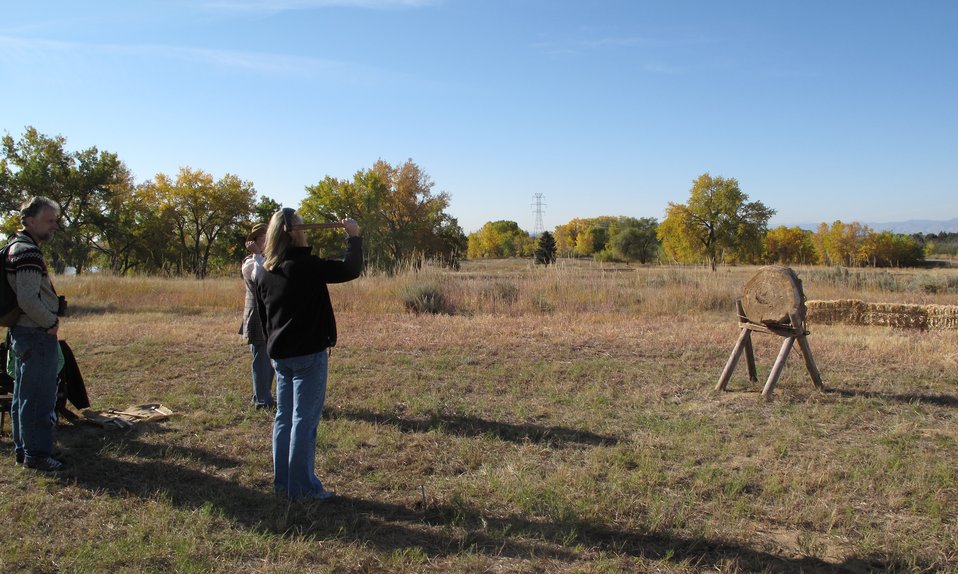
Hatchet Throwing

The U.S. Fish and Wildlife Service's Region 6 Deputy Director Noreen Walsh learning how to throw a hatchet.